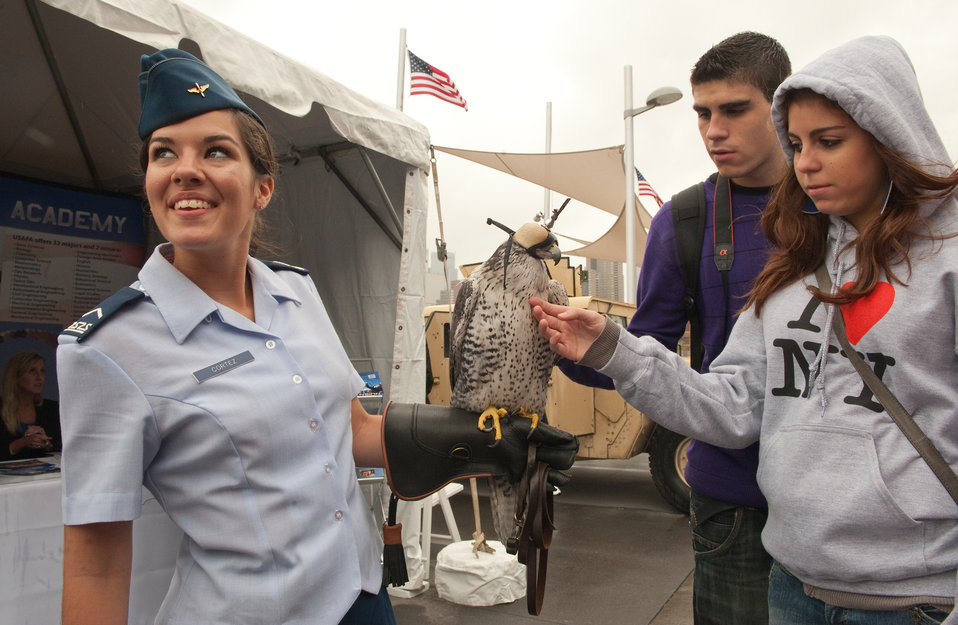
Air Force Week New York City Proclamation Ceremony

Jordi Gil and his sister Paula, pet U.S. Air Force Academy falcon mascot